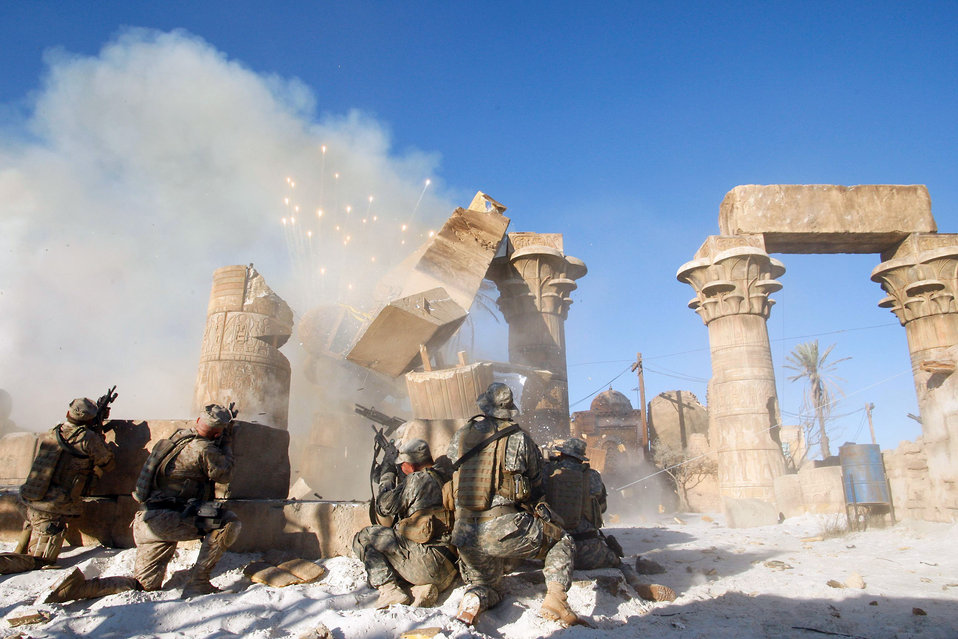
Tinker Airmen make mark in 'Transformers: Revenge of the Fallen'

A scene from